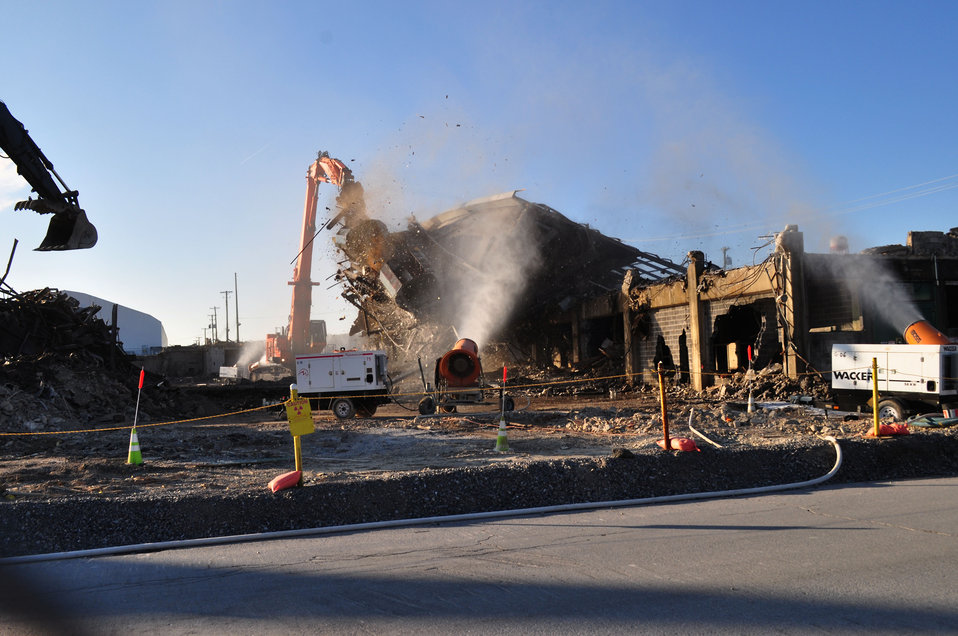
1

K-25 North Tower